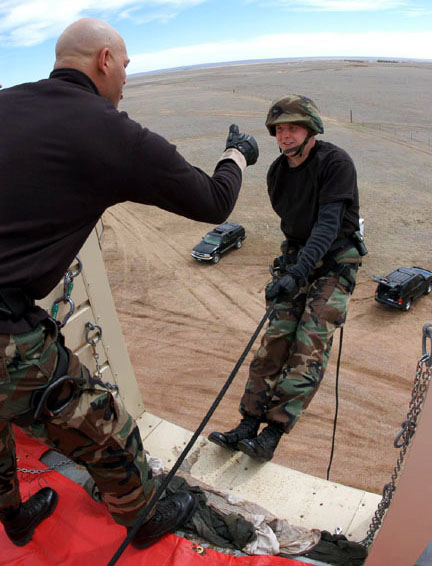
Good to go

SCHRIVER AIR FORCE BASE, Colo. -- Senior Airman Joey Jackson gives thumbs up to Staff Sgt. Leslie Tucker before he rappels off the training tower here. Both men are assigned to the 310th Security Forces Squadron, a Reserve unit. Rappelling is part of unit periodic training.